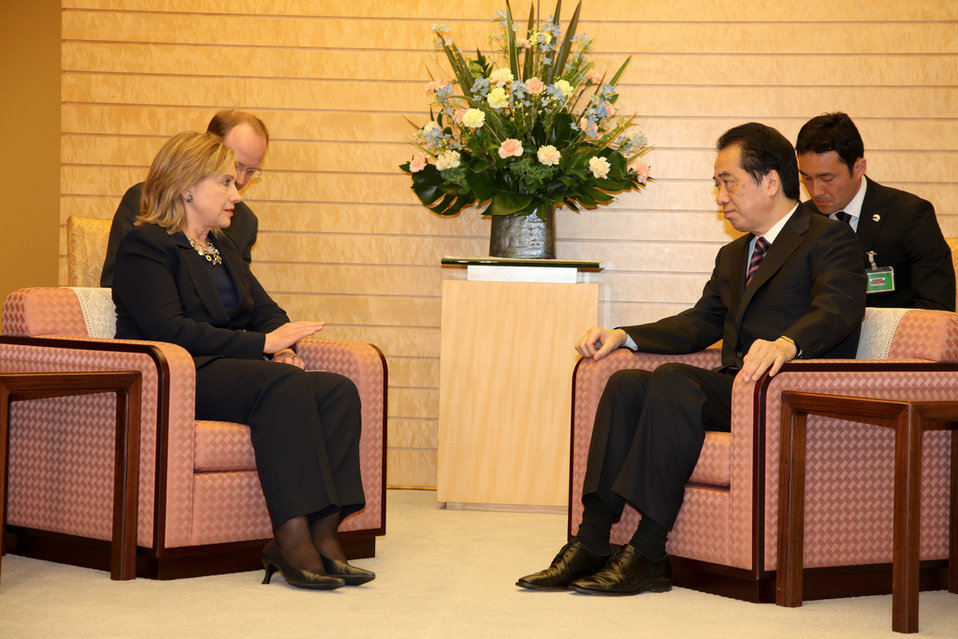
Secretary Clinton Meets With Japanese Prime Minister Kan

U.S. Secretary of State Hillary Rodham Clinton meets with Japanese Prime Minister Naoto Kan at his official residence, the Kantei, in Tokyo, Japan, on April 17, 2011.